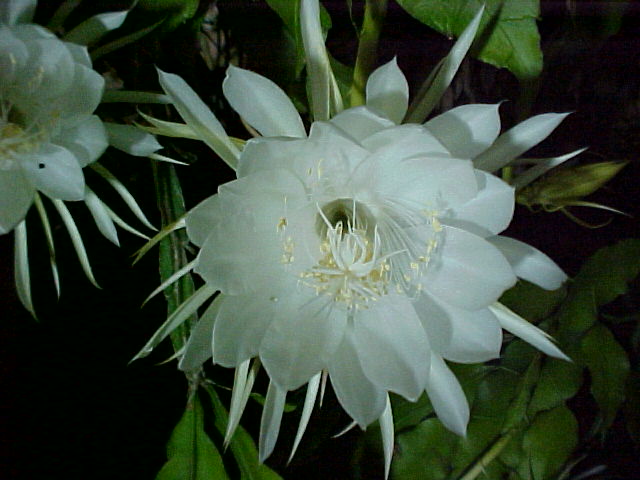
Epiphyllum oxypetalum. Foto tomada pelo autor do texto em sua residência.